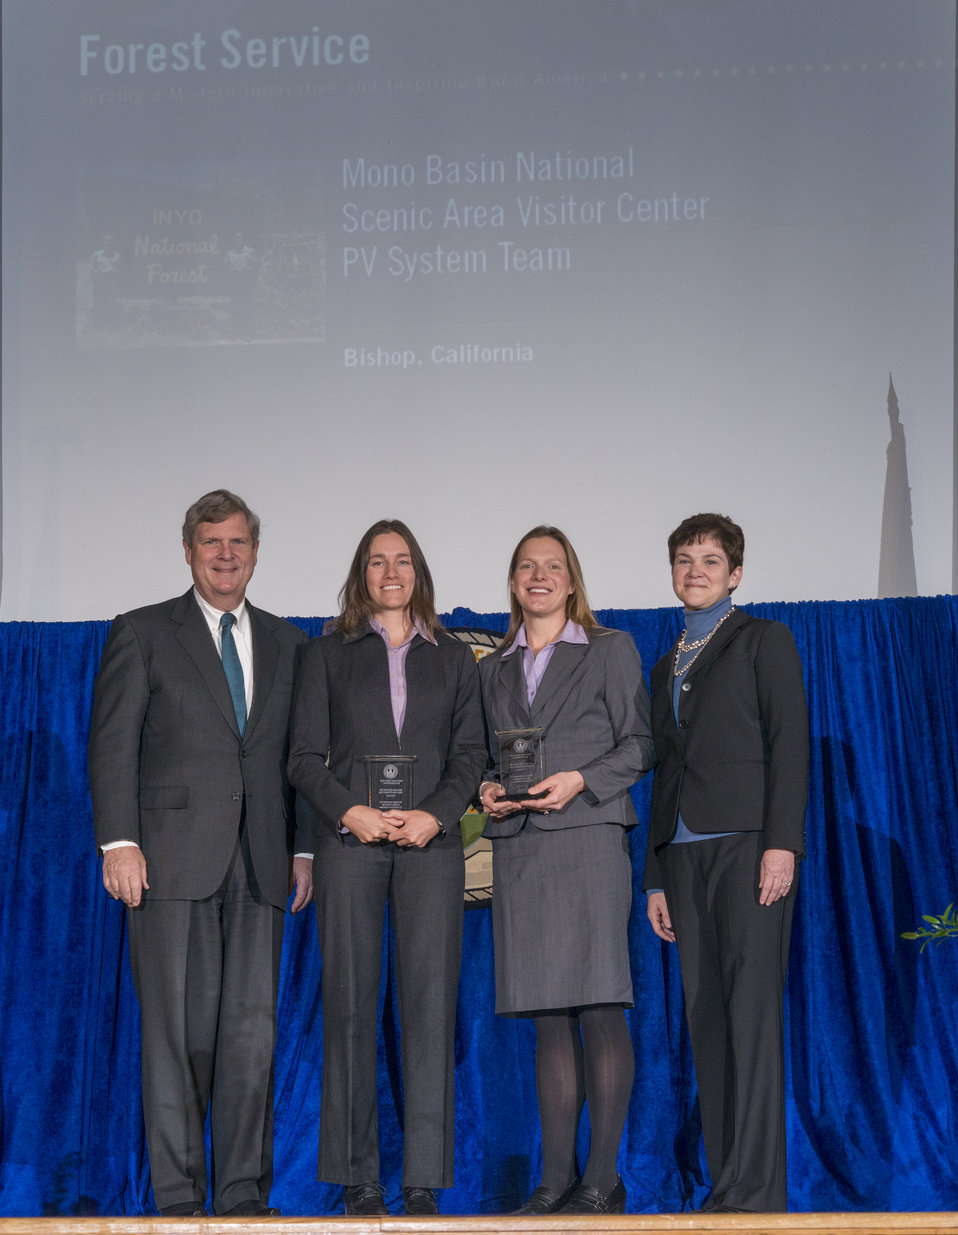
Agriculture Secretary Tom Vilsack and Agriculture Deputy Secretary Krysta Harden present the Secretary’s Honor Award to Mono Basin National Scenic Area Visitor Center PV (Photovoltaic) System Team, Forest Service, from Bishop, CA. Group leaders Adrienne E. Dunfee, P.E., and Nora L. Gamino for joint efforts in the field of sustainable operations, resulting in carbon footprint reduction at Department facilities and increasing sustainability awareness among National forest visitors at the 2013 Honor Awards in the Jefferson Auditorium at the U.S. Department of Agriculture (USDA) in Washington, D.C. on Wednesday, Dec.11, 2013.